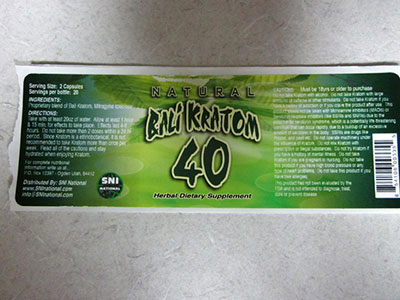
RECALLED – Maeng Da Kratom, Max Kratom, and Bali Kratom